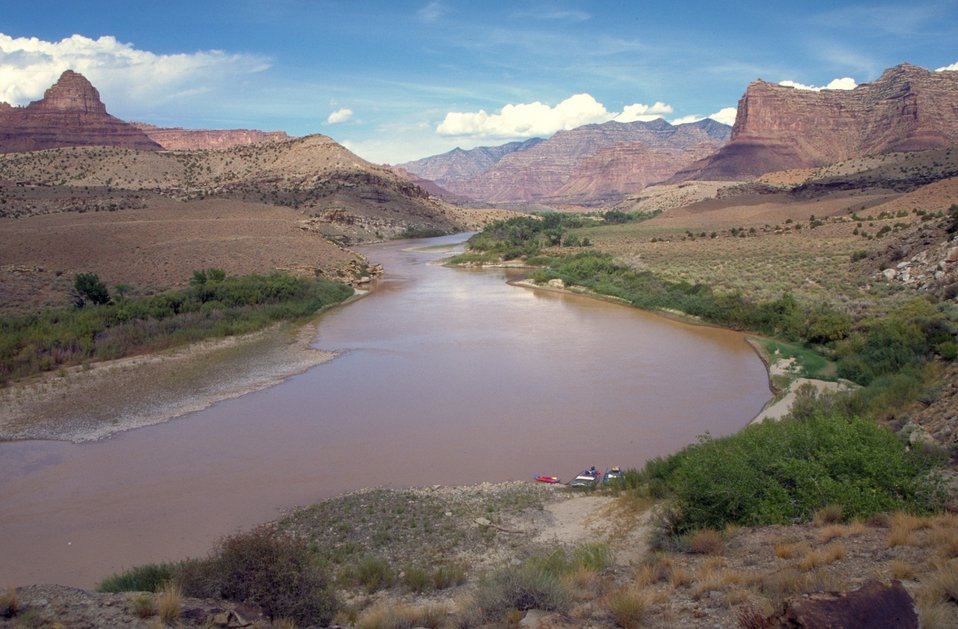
Desolation/Gray Canyons near Price, Utah.